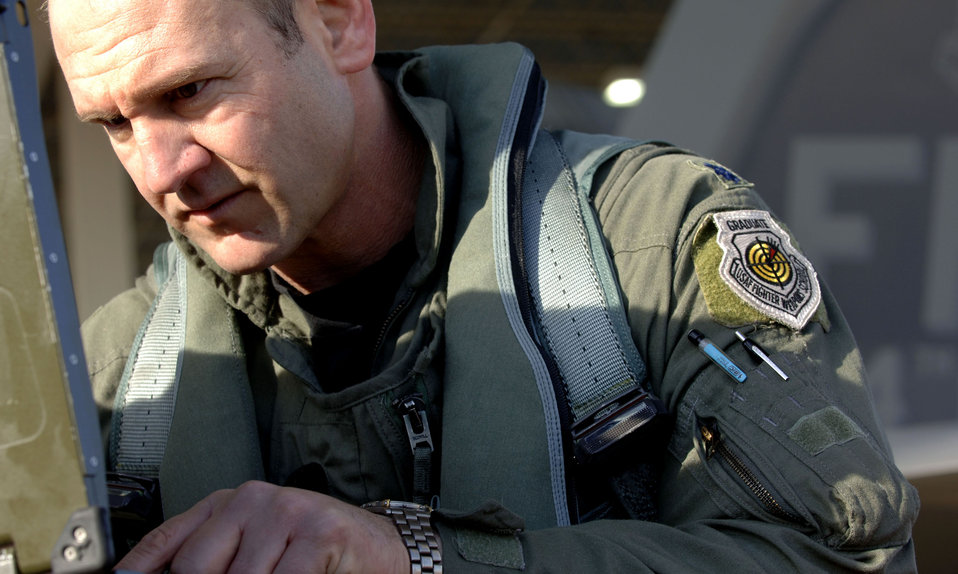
Raptors head to Red Flag

Lt. Col. Dirk Smith checks the F-22 Raptor aircraft forms on a portable maintenance adapter prior to launch Feb. 3 at Langley Air Force Base in Virginia.The 94th Fighter Squadron is deploying for Red Flag at Nellis AFB, Nev. Red Flag is an air combat training exercise designed to test pilots and air support crews' ability to affectively respond to real-world combat scenarios. This is the first deployment to Red Flag for the 94th FS with F-22s. Colonel Smith is the 94th FS commander.